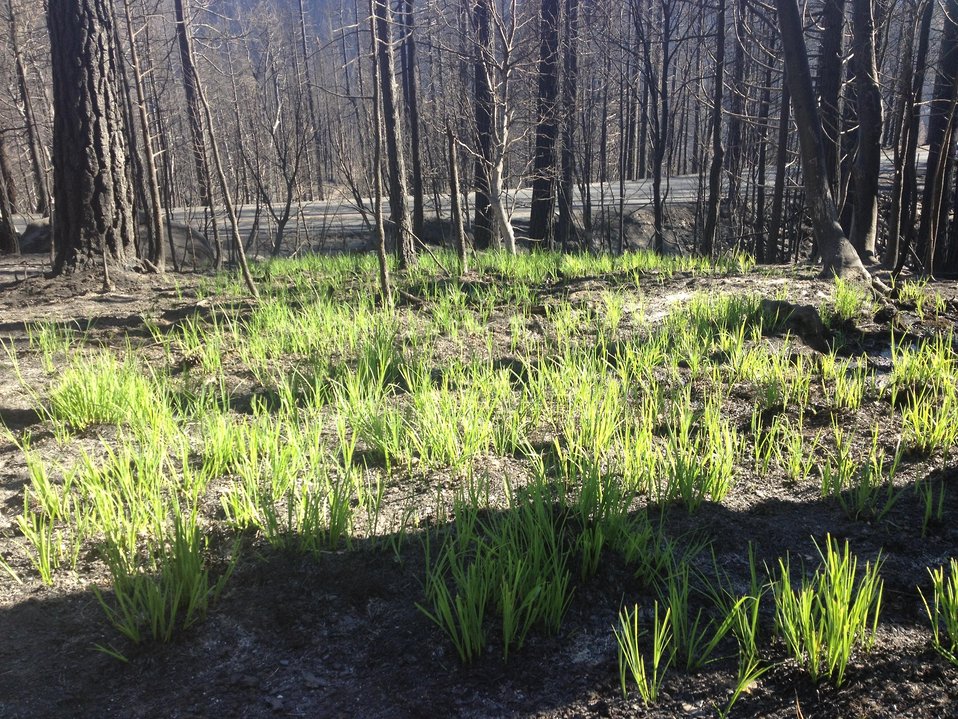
Grass sprouts in the black ash left from the Rim Fire. BAER is a rapid assessment of burned watersheds by a BAER team to identify imminent post-wildfire threats to human life and safety property and critical natural or cultural resources on National Forest System lands and take immediate actions to implement emergency stabilization measures before the first major storms. Fires result in loss of vegetation exposure of soil to erosion and increased water runoff that may lead to flooding increased sediment debris flows and damage to critical natural and cultural resources. BAER team members implement seeding and mulching installation to prevent erosion, erect temporary water run-off control structures that will protect recovering areas, and installation of warning signs, replace safety related facilities, remove safety hazards, prevent permanent loss of habitat for threatened and endangered species, and prevent the spread of noxious weeds and protect critical cultural resources. The Rim Fire in the Stanislaus National Forest near in California began on Aug. 17, 2013 and is under investigation. The fire has consumed approximately 256,169 acres and is 84% contained.